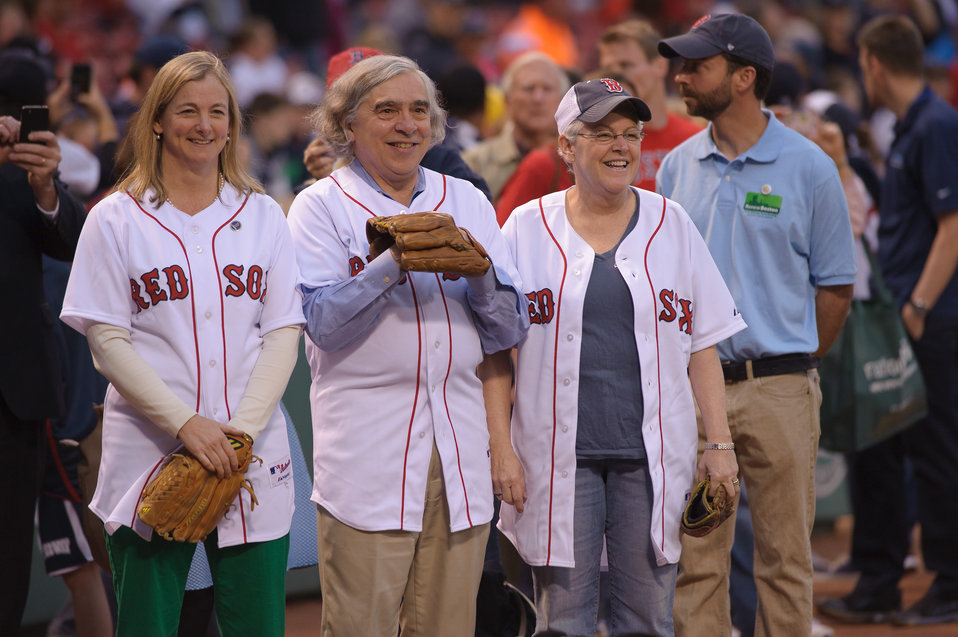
Sec. Moniz and Admin. McCarthy at Fenway Park